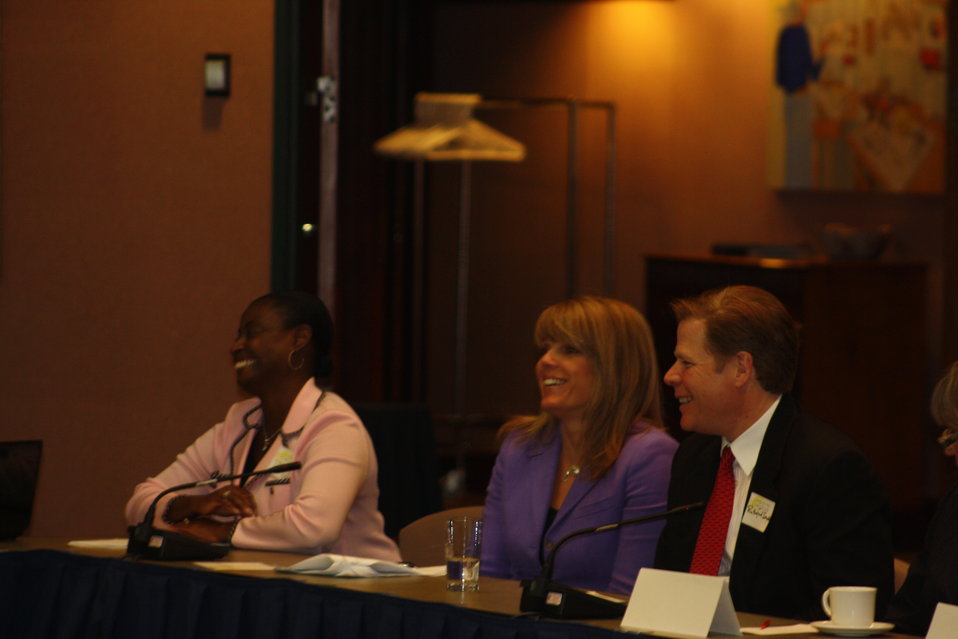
Faith-Based and Neighborhood Partnership launch at Atlanta's Carter Center